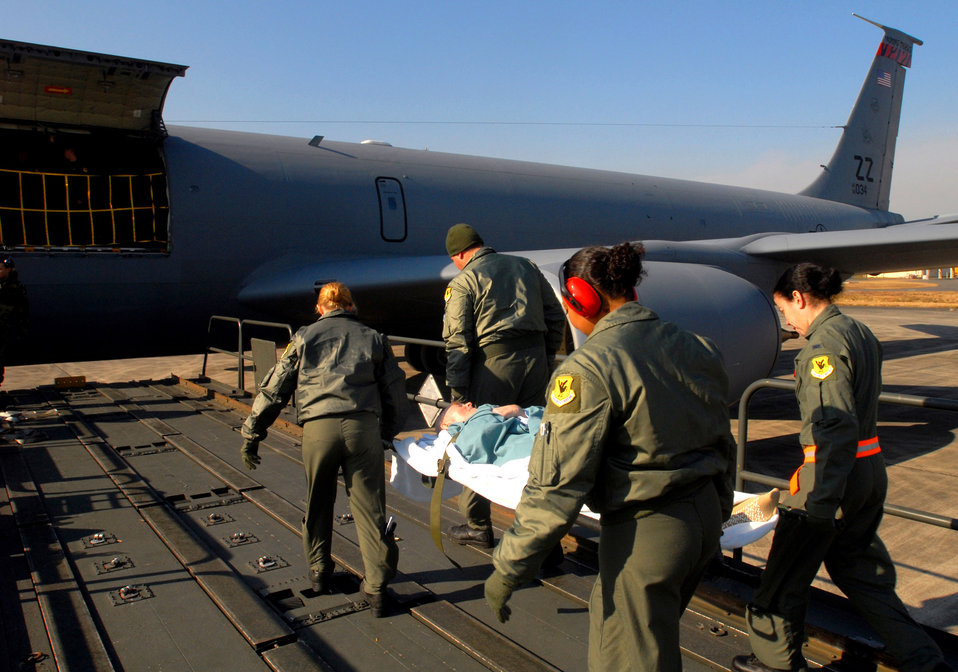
Tanker can serve as airborne ambulance

Airmen from the 18th Aeromedical Evacuation Squadron at Yokota Air Base, Japan, carry a patient onto a KC-135 Stratotanker Dec. 18 bound for Kadena AB, Japan. The patient will remain overnight before being transported to Travis Air Force Base, Calif. for further treatment.